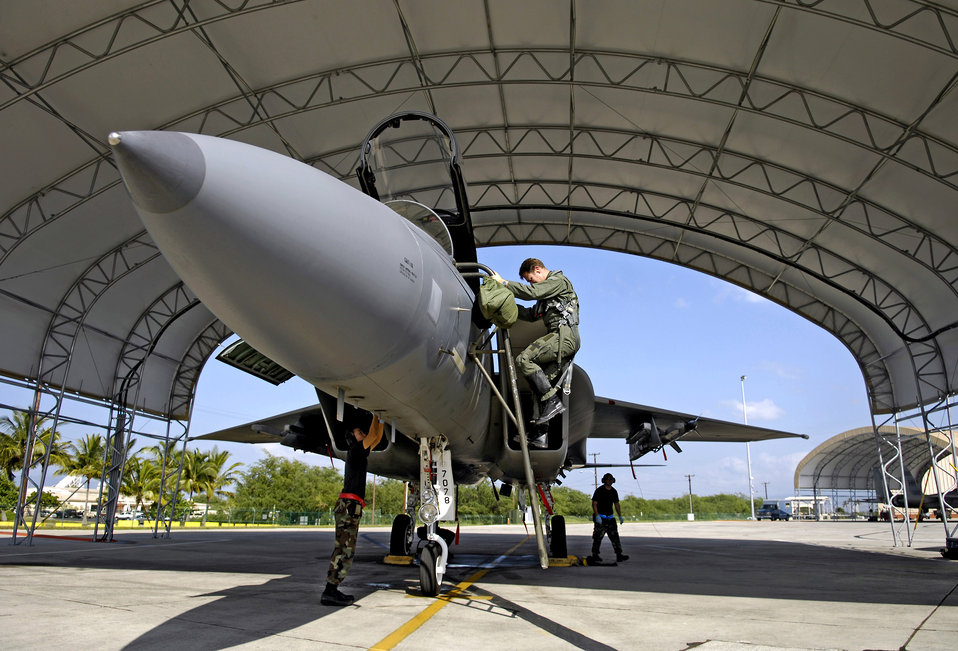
It was a good flight!

Maj. James Sage climbs down from his F-15A Eagle Jan. 9 at Hickam Air Force Base, Hawaii, after flying a training mission for currency. A through D model F-15s had not flown since they were grounded following the crash of an F-15C crash in November.